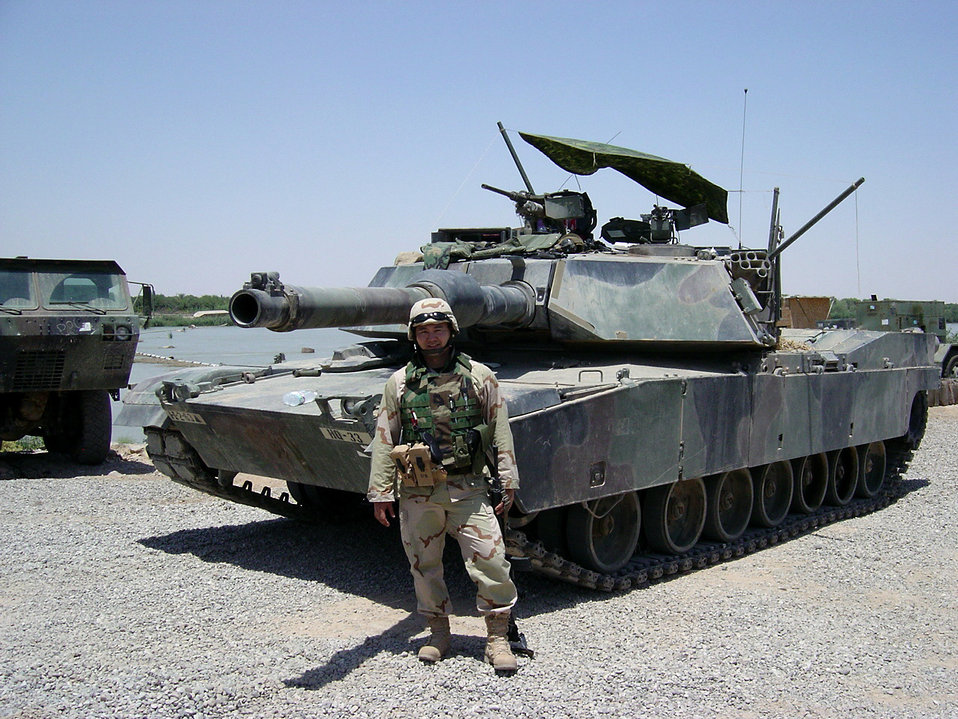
Deployed

Lt. Col. Kyle Kobashigawa was deployed in May 2004 with the Army. While deployed, Colonel Kobashigawa also worked with a Marine Bridging Company doing repairs on the As Sindyah Bridge on the Tigris River just north of Baghdad, Iraq. He is assigned to the Arizona Air National Guard's 161st Air Refueling Wing.